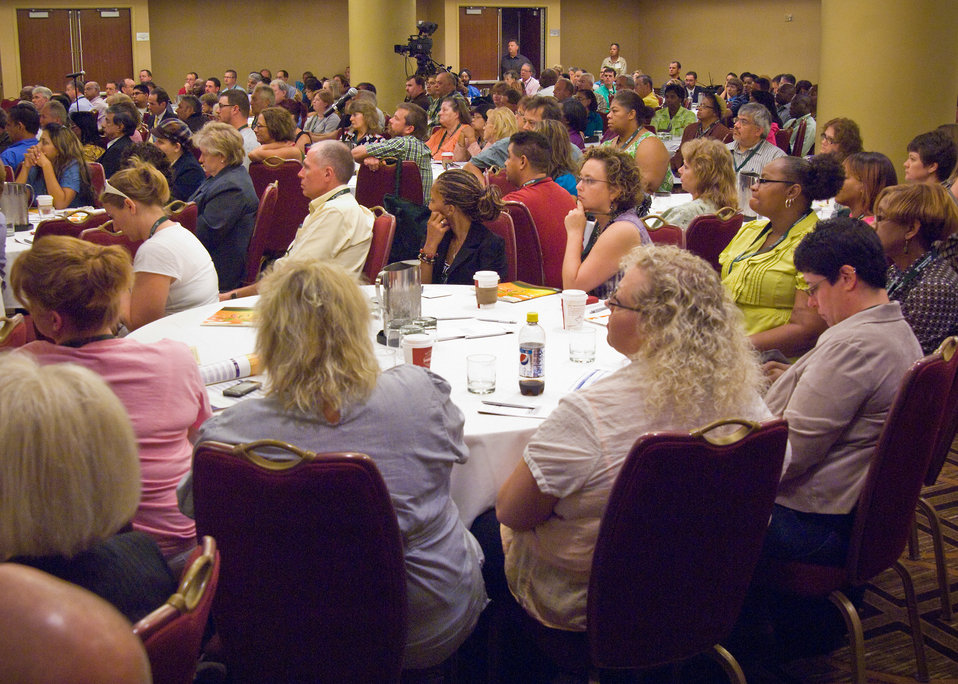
Food Safety Inspection Service employees at the 2010 FSIS Diversity Training Conference in Arlington, Virginia, Tuesday, August 31, 2010. The diversity conference is an annual conference held by the agency to improve civil rights for clients and employees. USDA Photo 10di1475-27 by Bob Nichols.